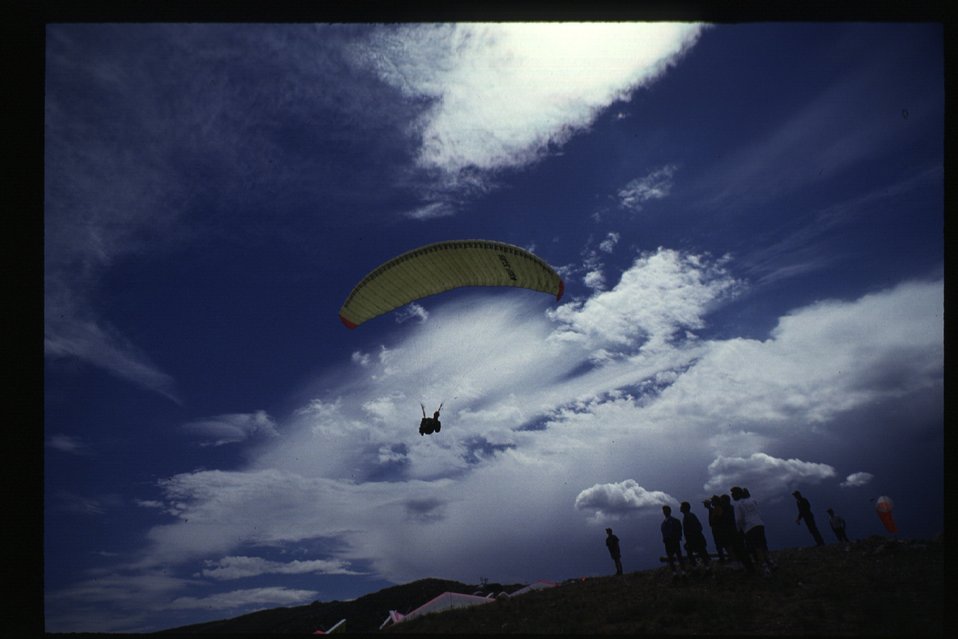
Hang Gliders on King Mountain Arco Idaho Idaho Falls Field Office USRD Upper Snake River District